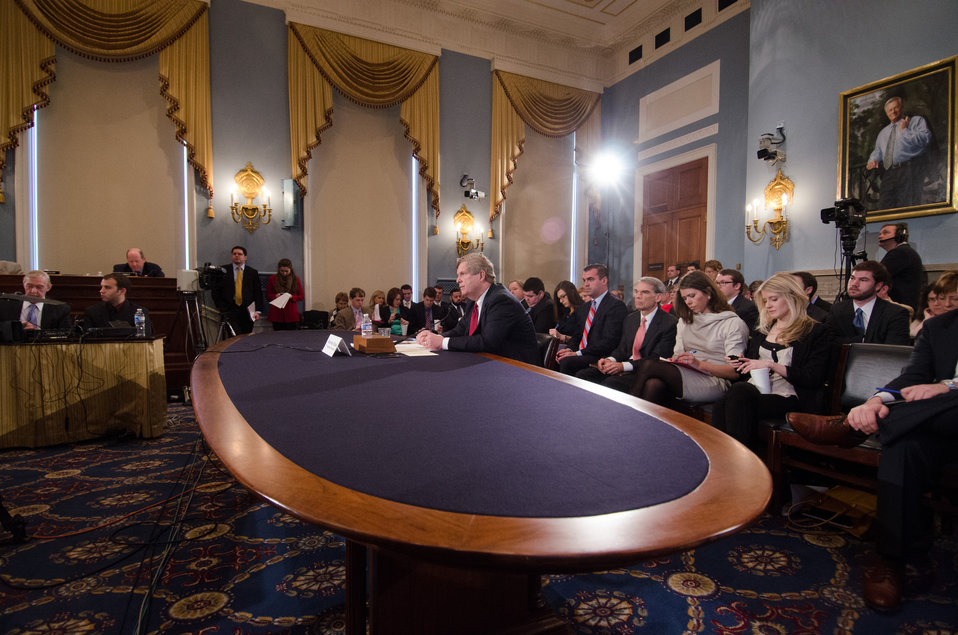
Agriculture Secretary Tom Vilsack testifies before the House Agriculture Committee regarding the “State of the Rural Economy“ at the Longworth House Office Building in Washington, D.C. on Tuesday, Mar. 5, 2013.